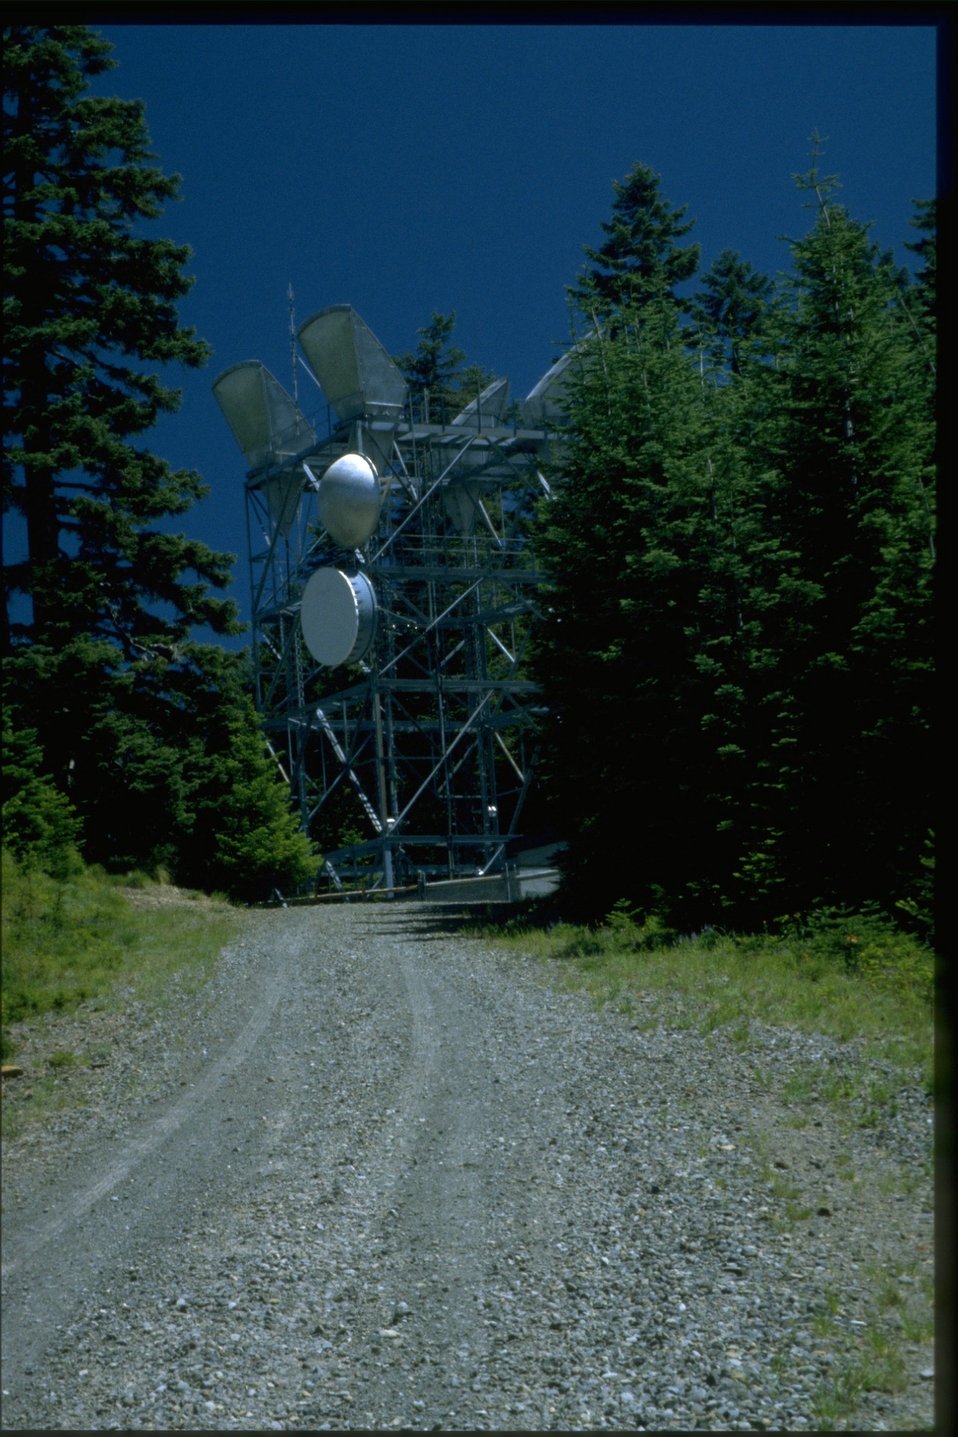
Microwave Relay Station.